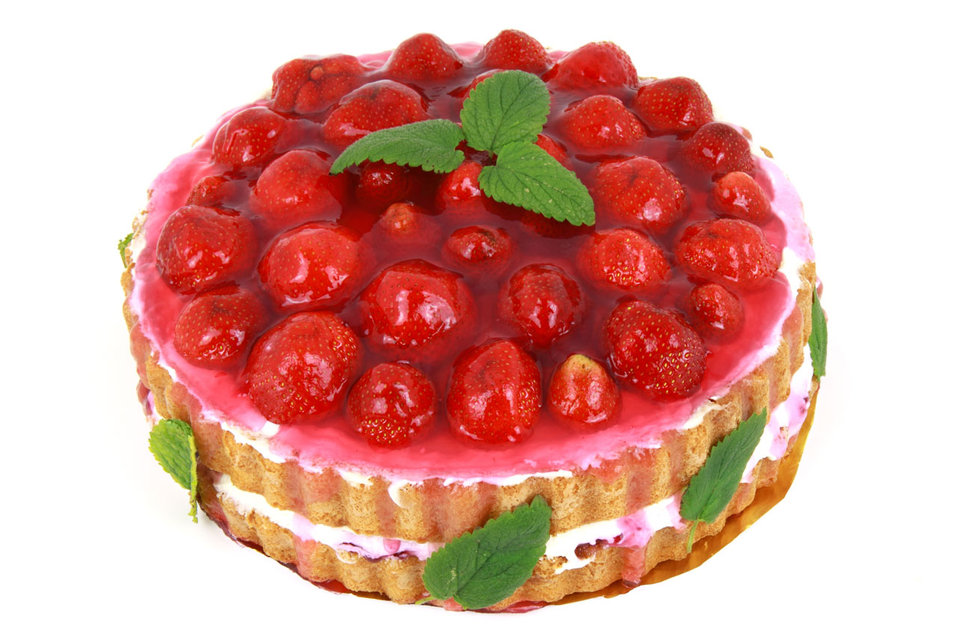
Birthday cake

Homemade birthday strawberry cake.